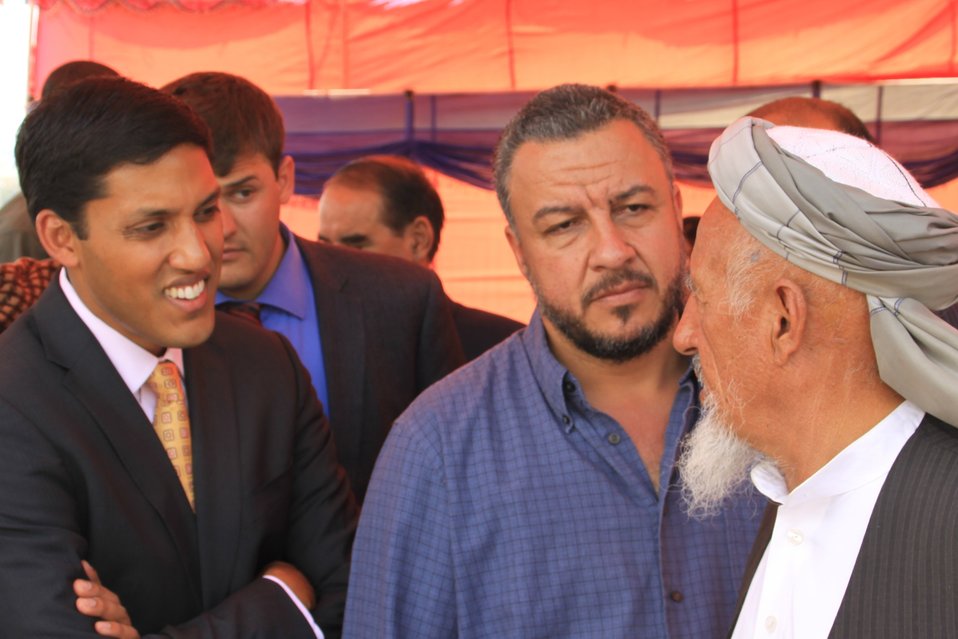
Badam Bagh Farm